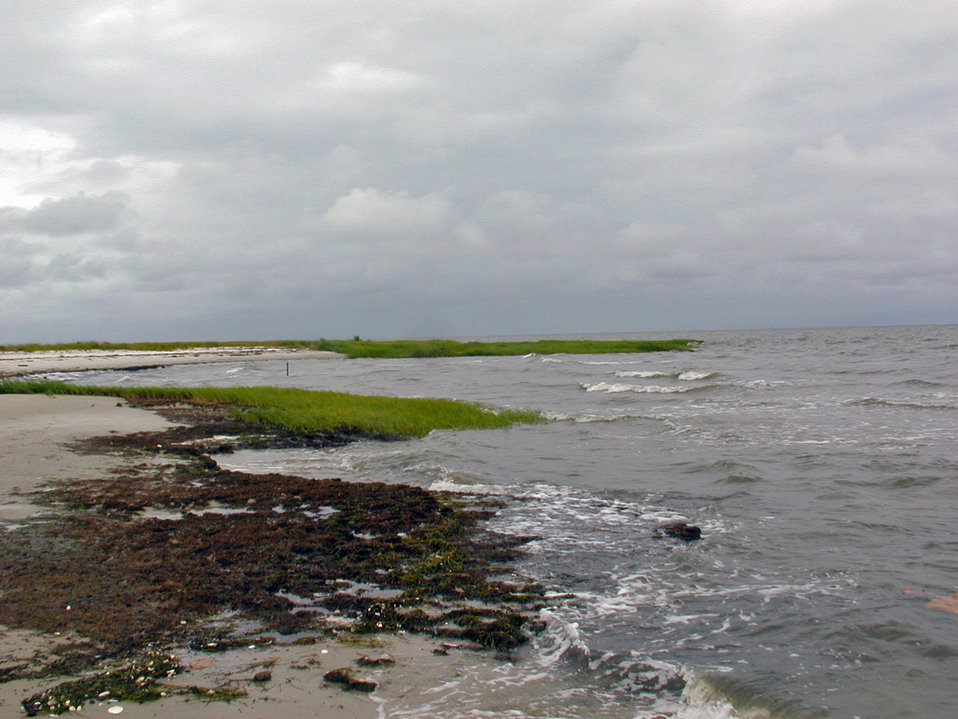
Shoreline

Plum Tree Island National Wildlife Refuge, VA.